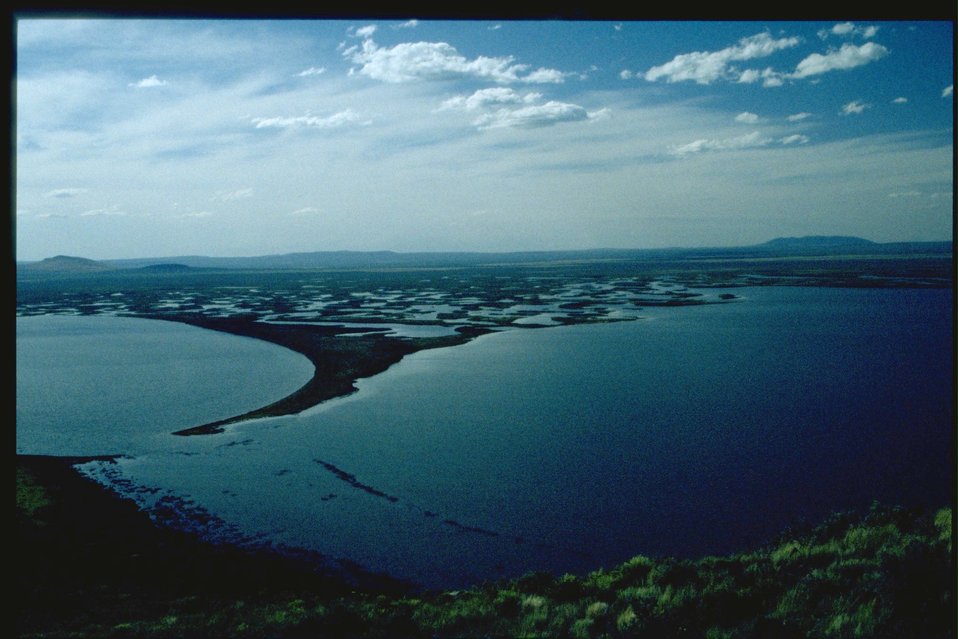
Warner Wetlands.